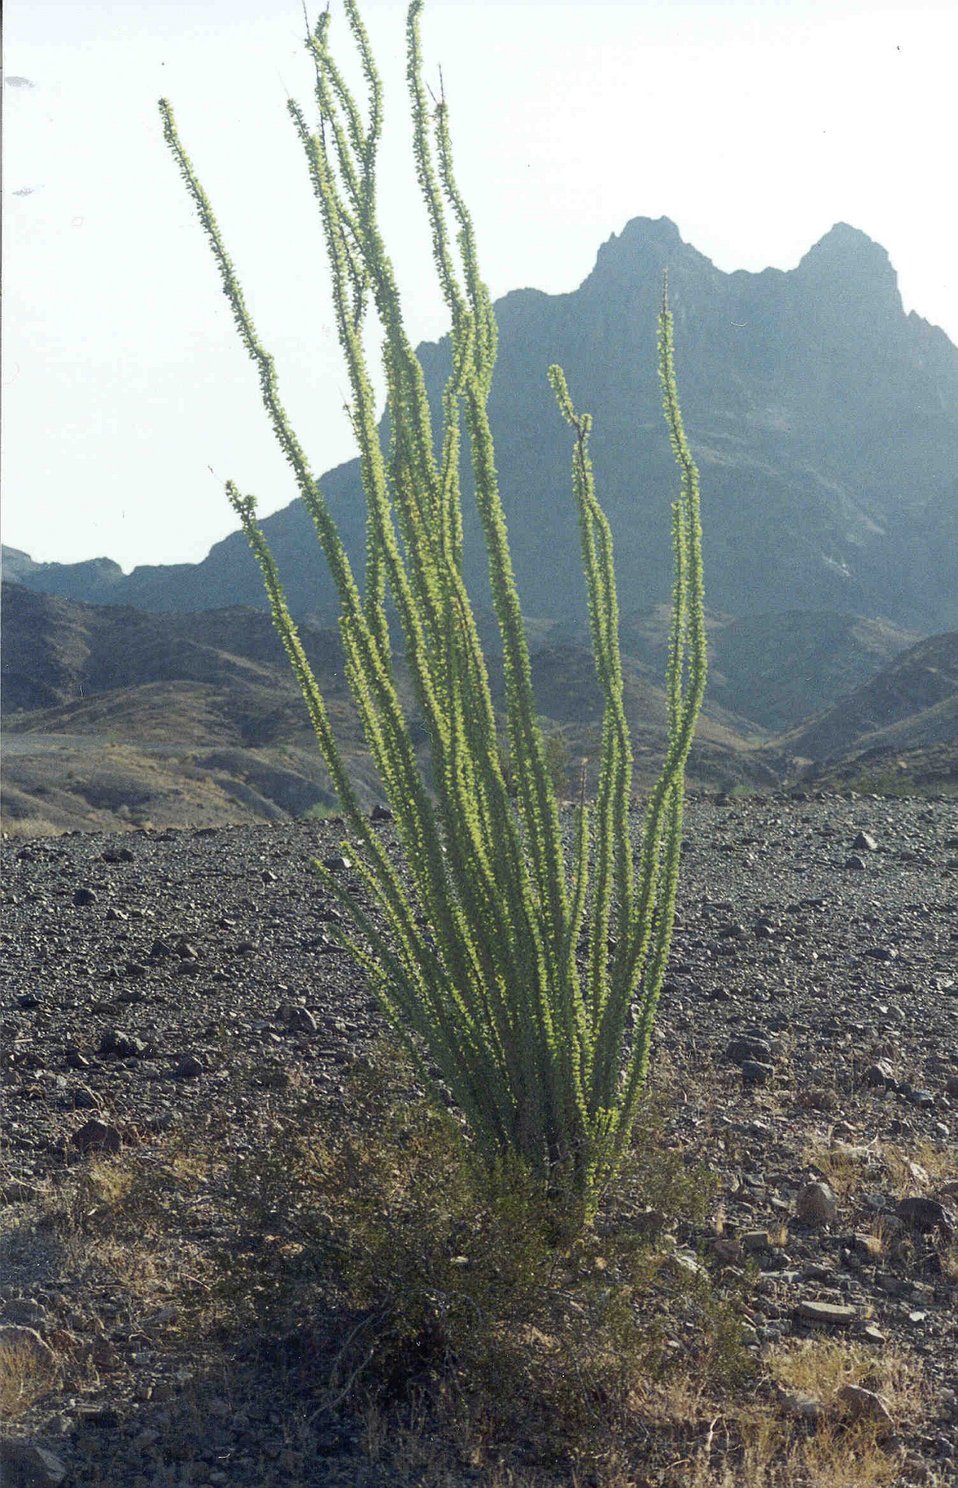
A lone ocotilla with Muggins Peak in the background.